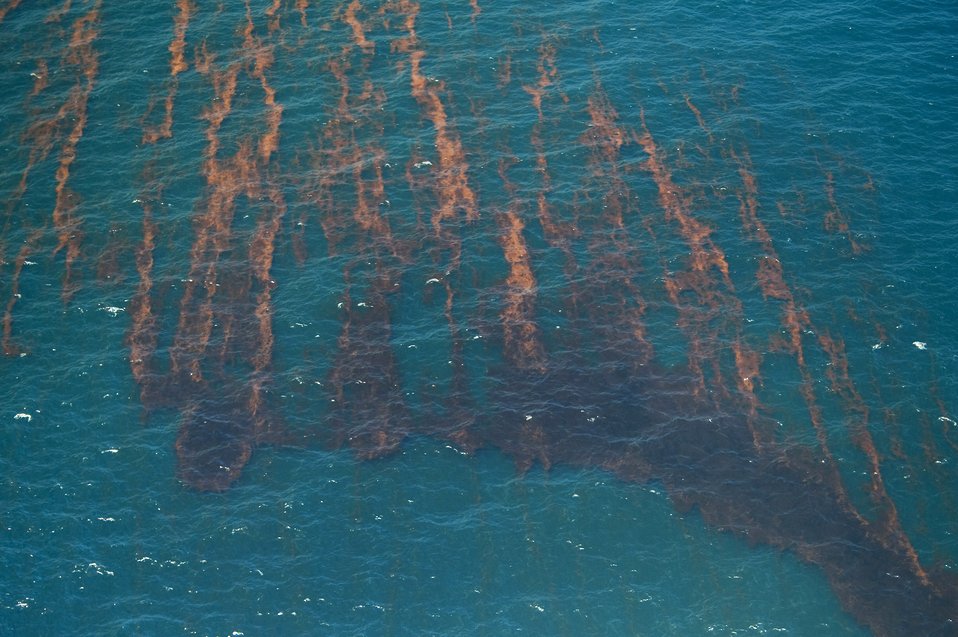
C-130 aircrew helps fight oil spill

Crewmembers of a chemical dispersing C-130 Hercules attempt to battle an oil slick in the Gulf of Mexico as part of the Deepwater Horizon Response effort May 9, 2010. Members are from the Air Force Reserve Command's 910th Airlift Wing at Youngstown-Warren Air Reserve Station, Ohio.